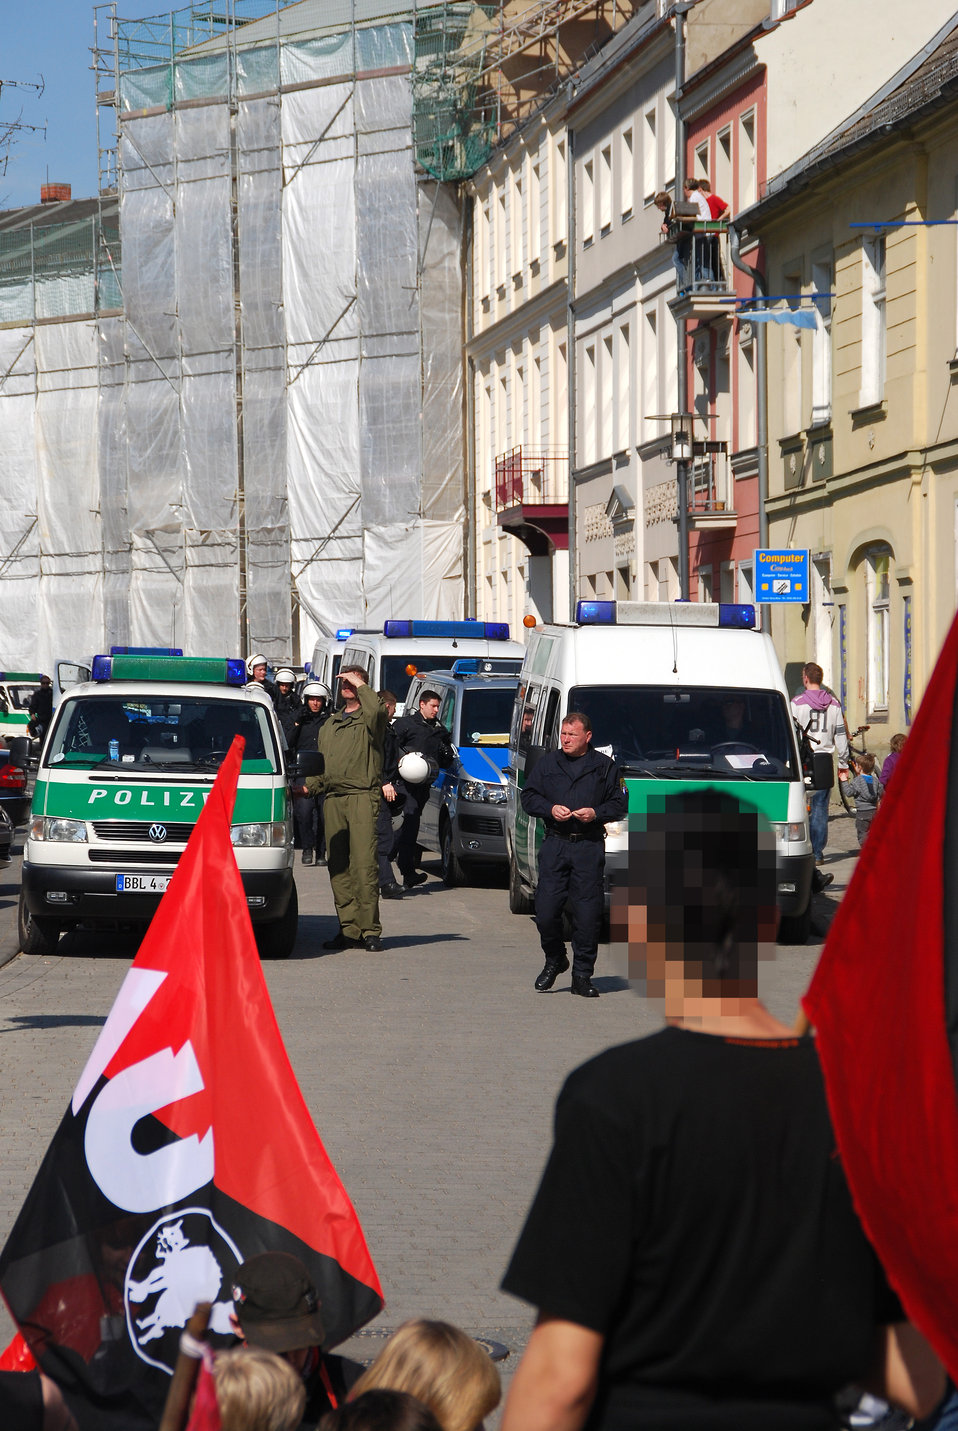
Proteste gegen den Nazi-Aufmarsch am 24.3.2012 in Frankfurt (Oder)